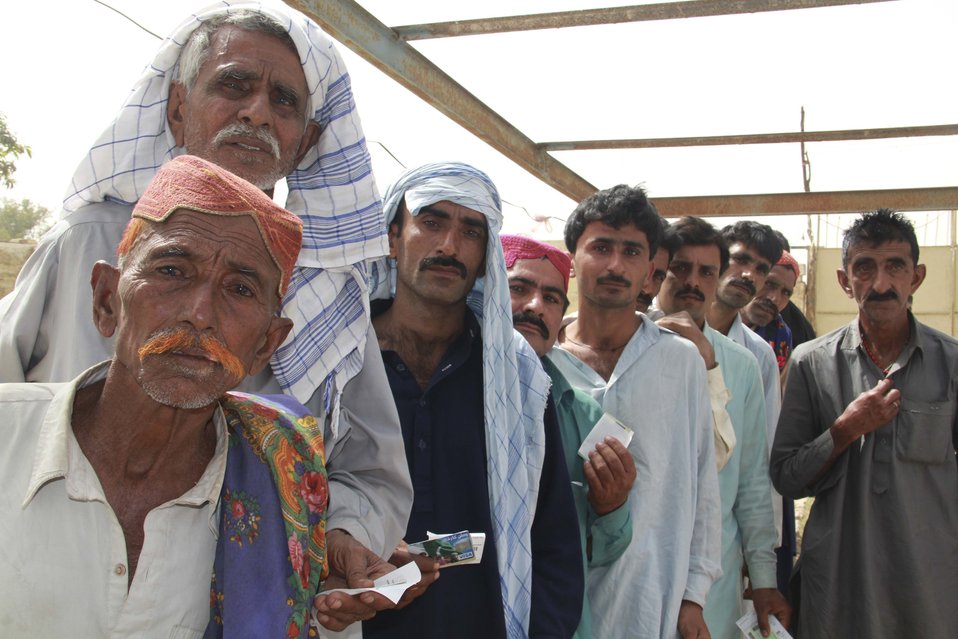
Citizens Damage Compensation Program